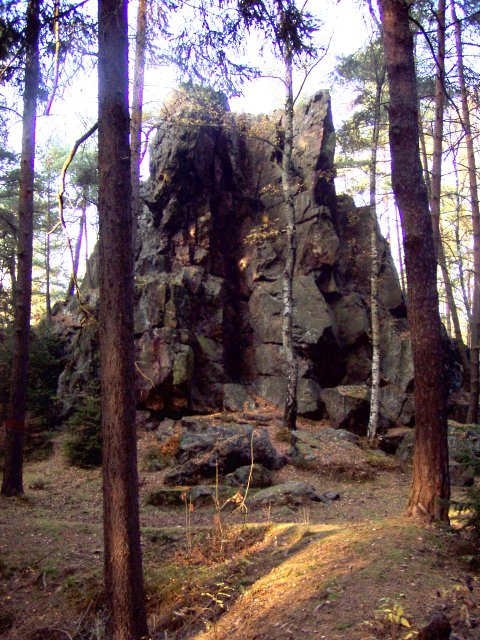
Čeština: Andrejšky - pohled po příchodu po naučné stezce od hradu Radyně